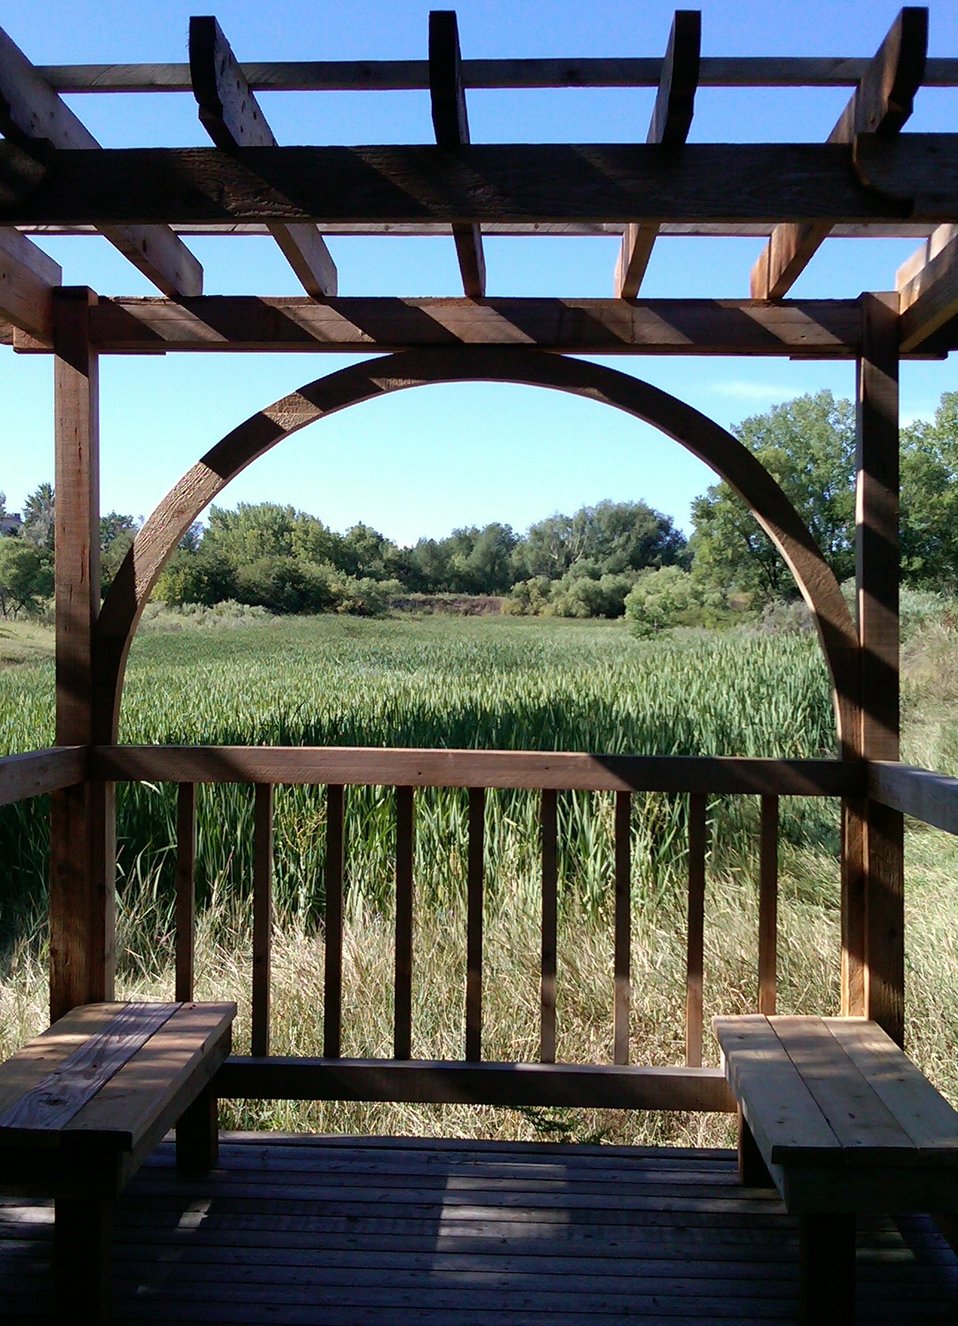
Eagle Scout - Wetland Gazebo